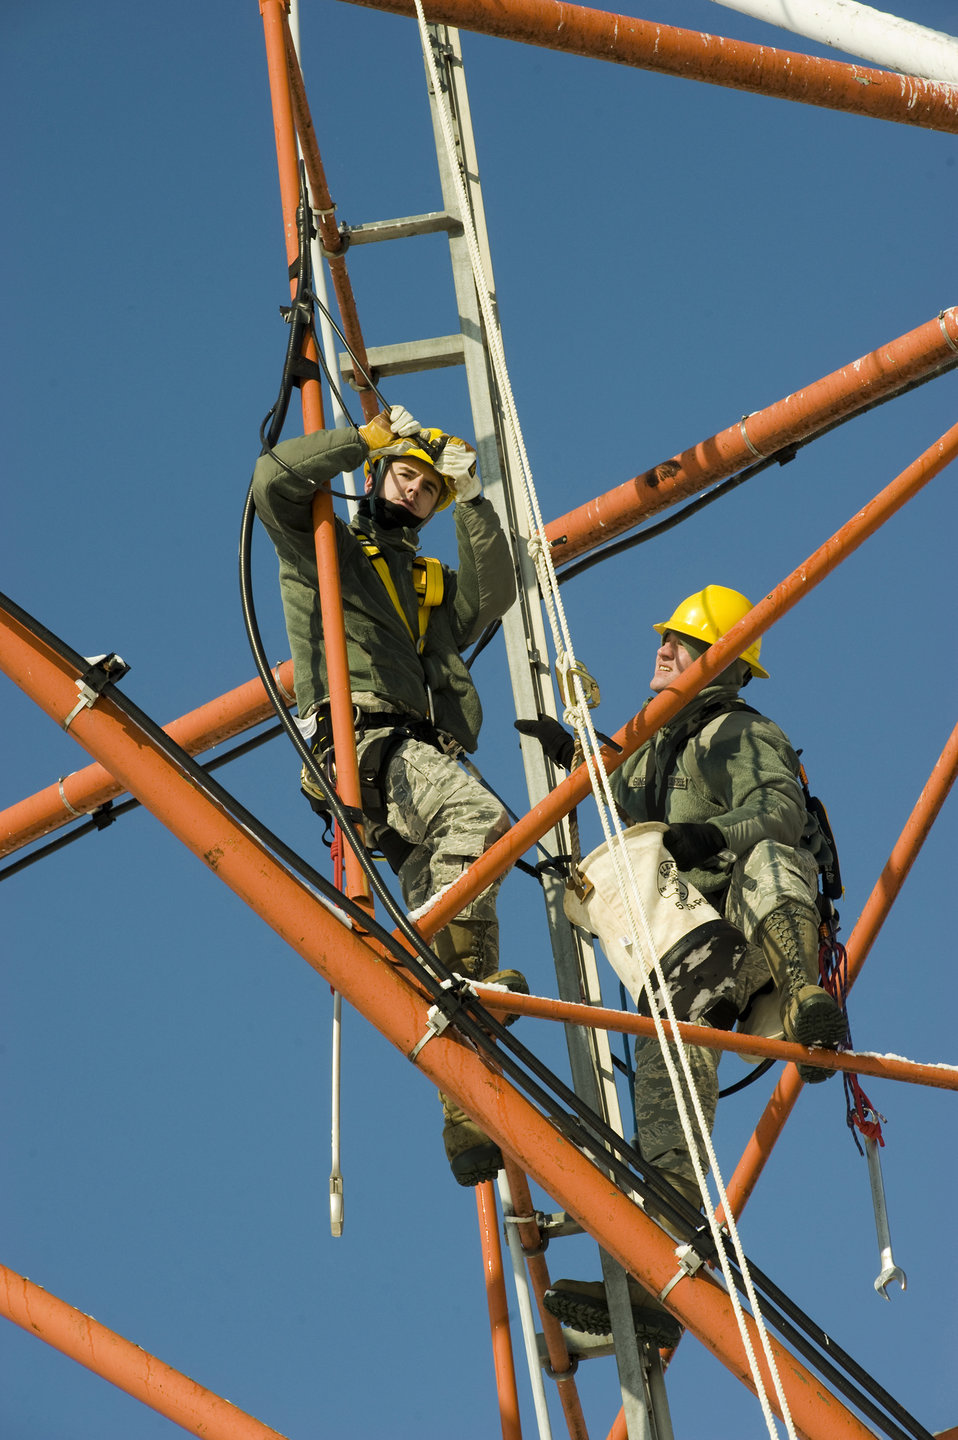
High-wire work

Airman 1st Class Eric Walden (left) and Staff Sgt. Scott Gingrich perform a preventive maintenance inspection on a 285-foot tower Jan. 12, 2011, near the Davidsonville, Md., site headquarters. Both Airmen are with the 89th Communications Squadron.